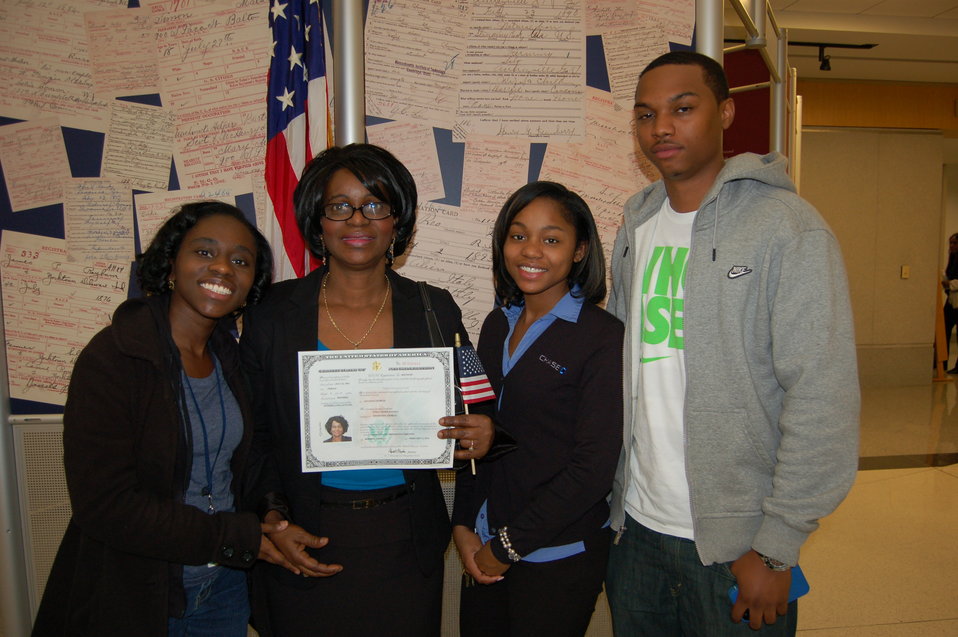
New Citizens